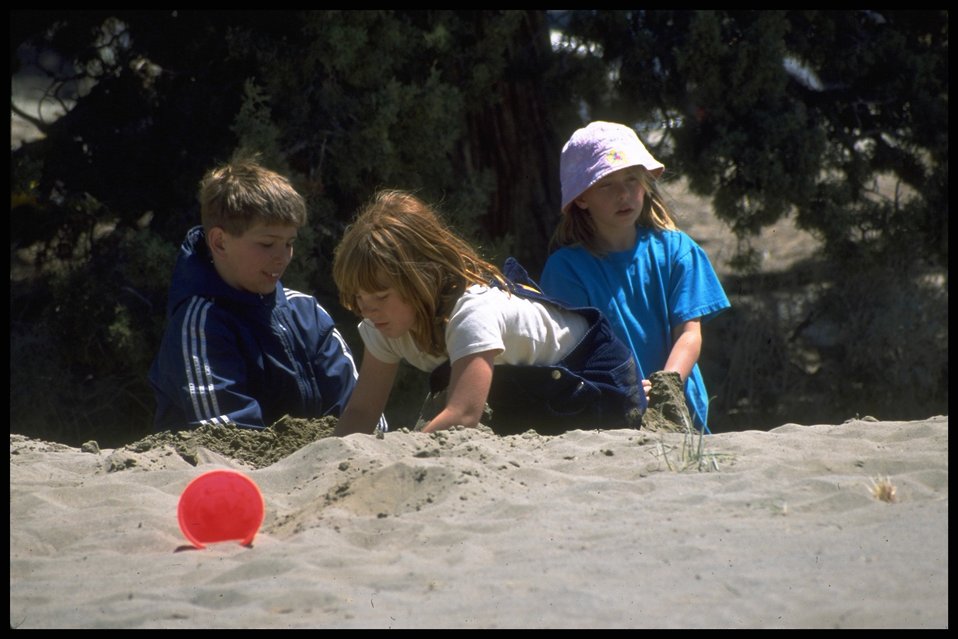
Childern playing in Sand Dunes, Christmas Valley. Lakeview District.